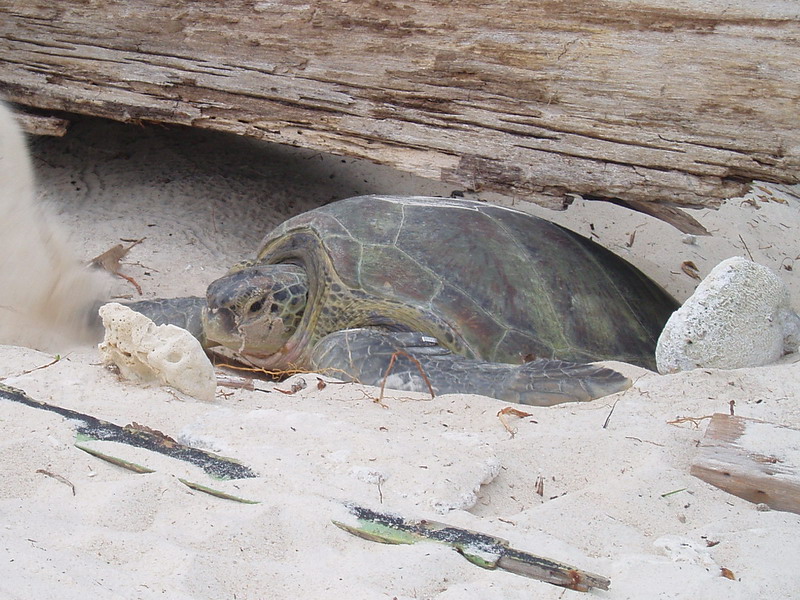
Green sea turtles

A female green sea turtle digs a nest for her eggs on a beach on Ascension Island, a small island located in the South Atlantic Ocean. Every year, thousands of green sea turtles visit the island to mate and lay their eggs on its beaches. Members of the 45th Space Wing's Detachment 2 environmental engineering team work closely with the island government's conservation group to ensure the endangered sea turtles are properly protected and respected by the people of the island.